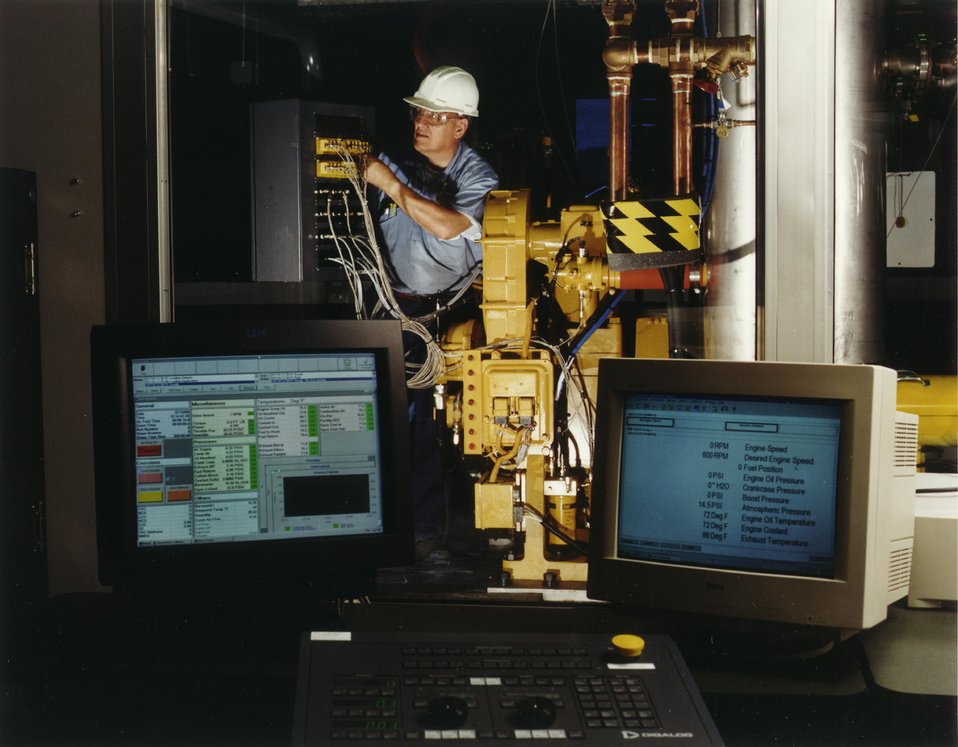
ANL TECHNICIAN PLUGS A THERMOCOUPLE INTO THE DATA LOGGING SYSTEM TO MONITOR AND REPORT ALL PRESSURES AND TEMPERATURES FROM CATERPILLAR ENGINE.

CLEAN, EFFICIENT ENGINES ARE THE GOAL OF ARGONNE'S POWERTRAIN AND EMISSIONS RESEARCH FACILITY. THE HIGH TECH ENGINE RESEARCH CENTER HAS FIVE TEST AREAS, ALL OF WHICH DRAW DATA OUT OF ENGINES THAT POWER TRANSPORTATION FROM HYBRID CARS TO DIESEL TRAIN LOCOMOTIVES.